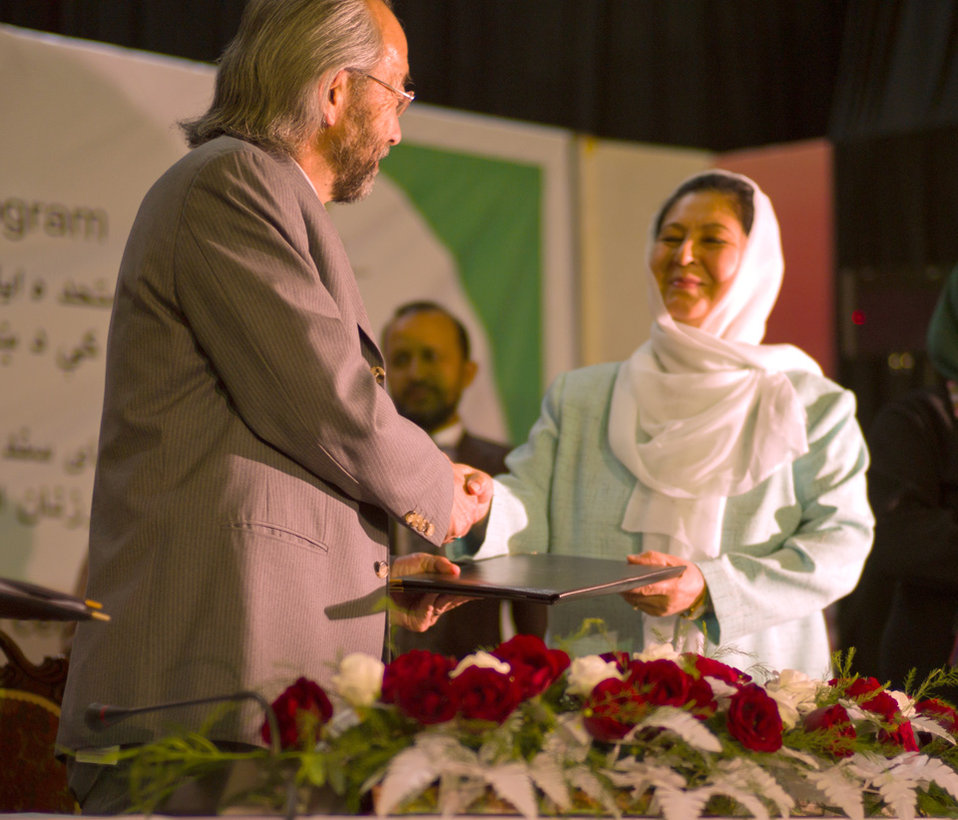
Shaking hands over agreement